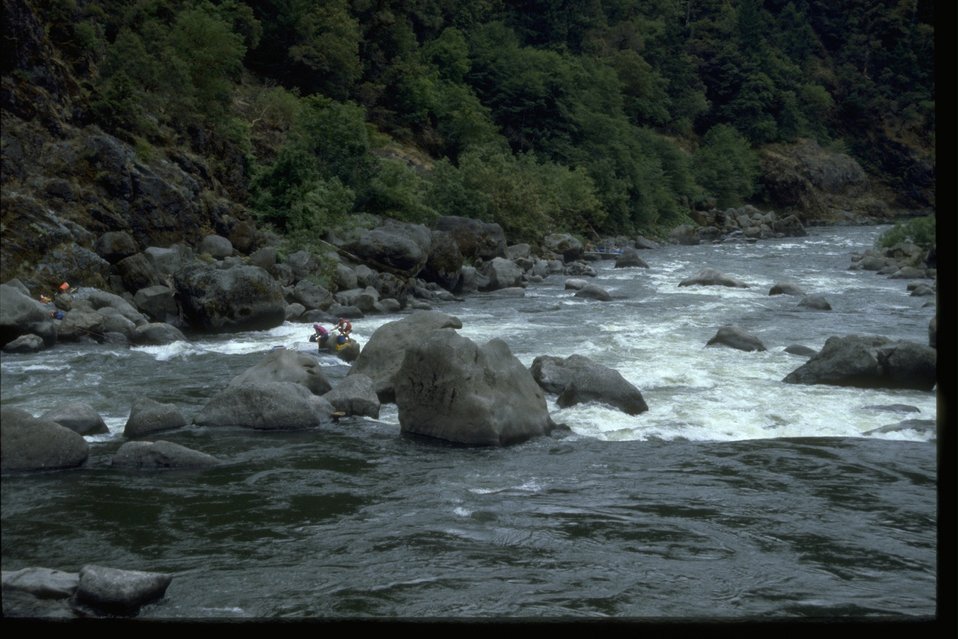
Raft stuck at Blossom Bar at Rainie Falls on the Rainie River.